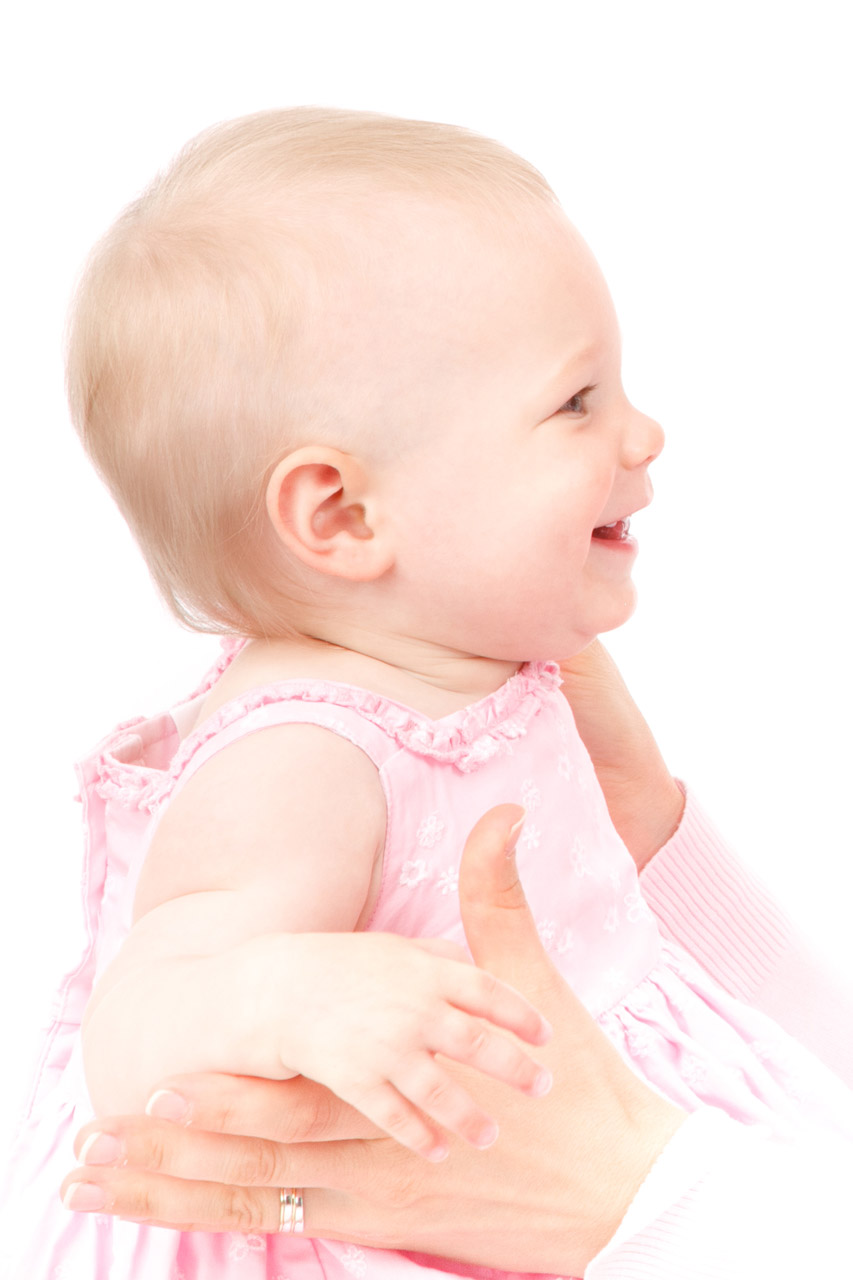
Baby profile

Profile of a baby girl looking happily at mum isolated on white background.